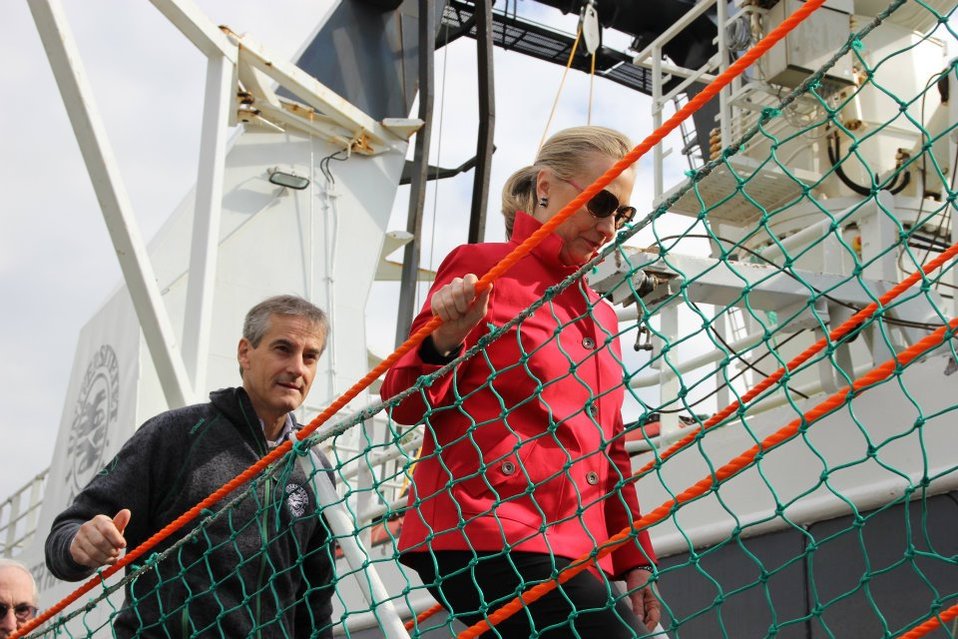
Secretary Clinton and Norwegian Foreign Minister Store Participate in an Arctic Research Vessel Tour

U.S. Secretary of State Hillary Rodham Clinton and Norwegian Foreign Minister Jonas Gahr Store participate in an Arctic research vessel tour in Tromso, Norway, on June 2, 2012.